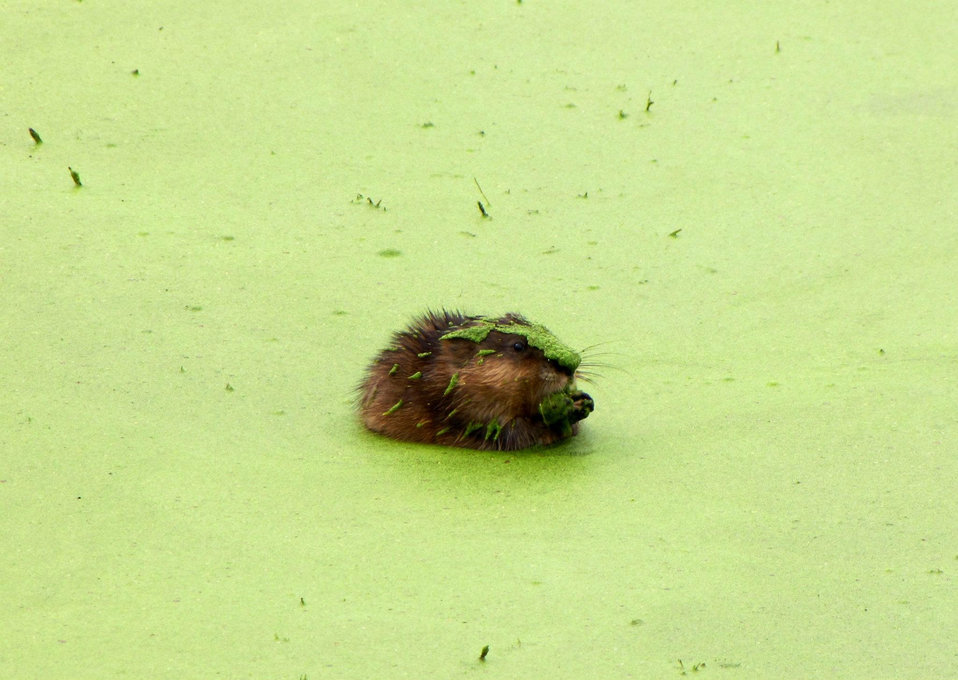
muskrat

Port Louisa National Wildlife Refuge, MO
Fall 2011